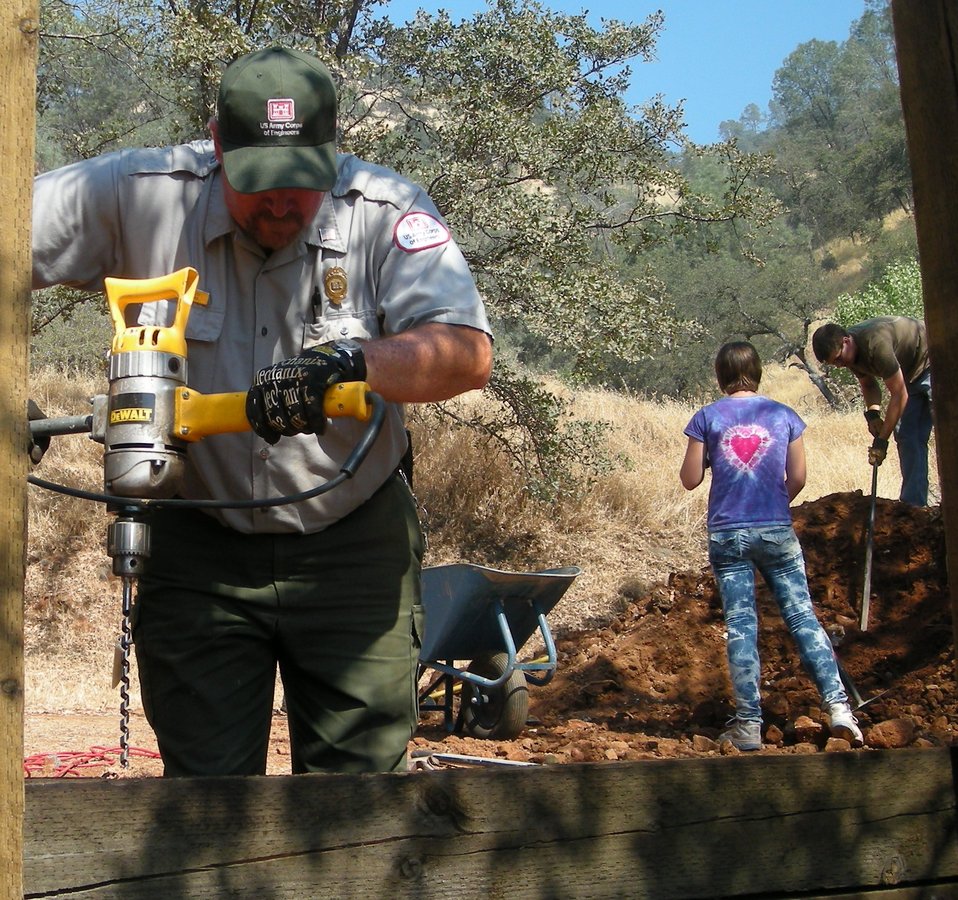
PINE FLAT LAKE, Calif. (Sept. 25, 2010) -- U.S. Army Corps of Engineers Sacramento District park ranger Todd Hatch installs a retaining wall during the 17th annual National Public Lands Day here Sept. 25. Park rangers from the U.S. Army Corps of Engineers Sacramento District and more than 33 volunteers celebrated the day with cleanup efforts at the park. The Corps has been involved with National Public Lands Day since its inception in 1994 and has consistently been one of the largest providers of sites and volunteers participating in the event. This year, the celebration coincides with California Coastal Cleanup Day and President Barack Obama’s America’s Great Outdoors Initiative, an effort to promote the conservation of outdoor spaces and reconnect Americans to the outdoors.